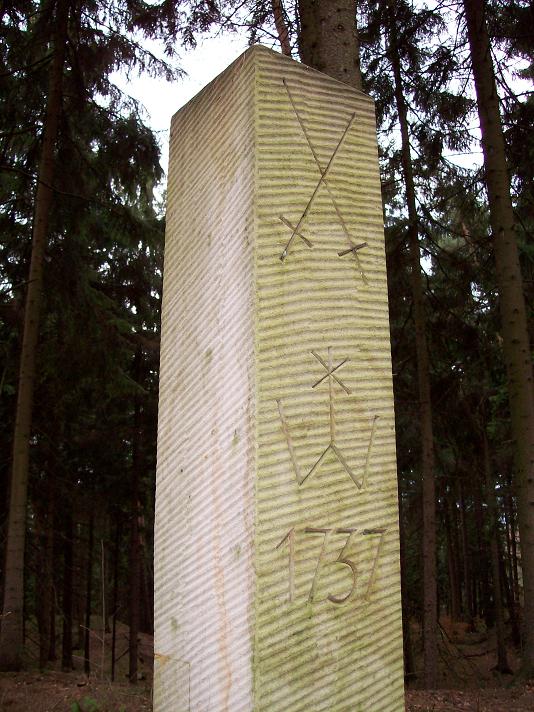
Deutsch: Jagdsäule im Tharandter Wald